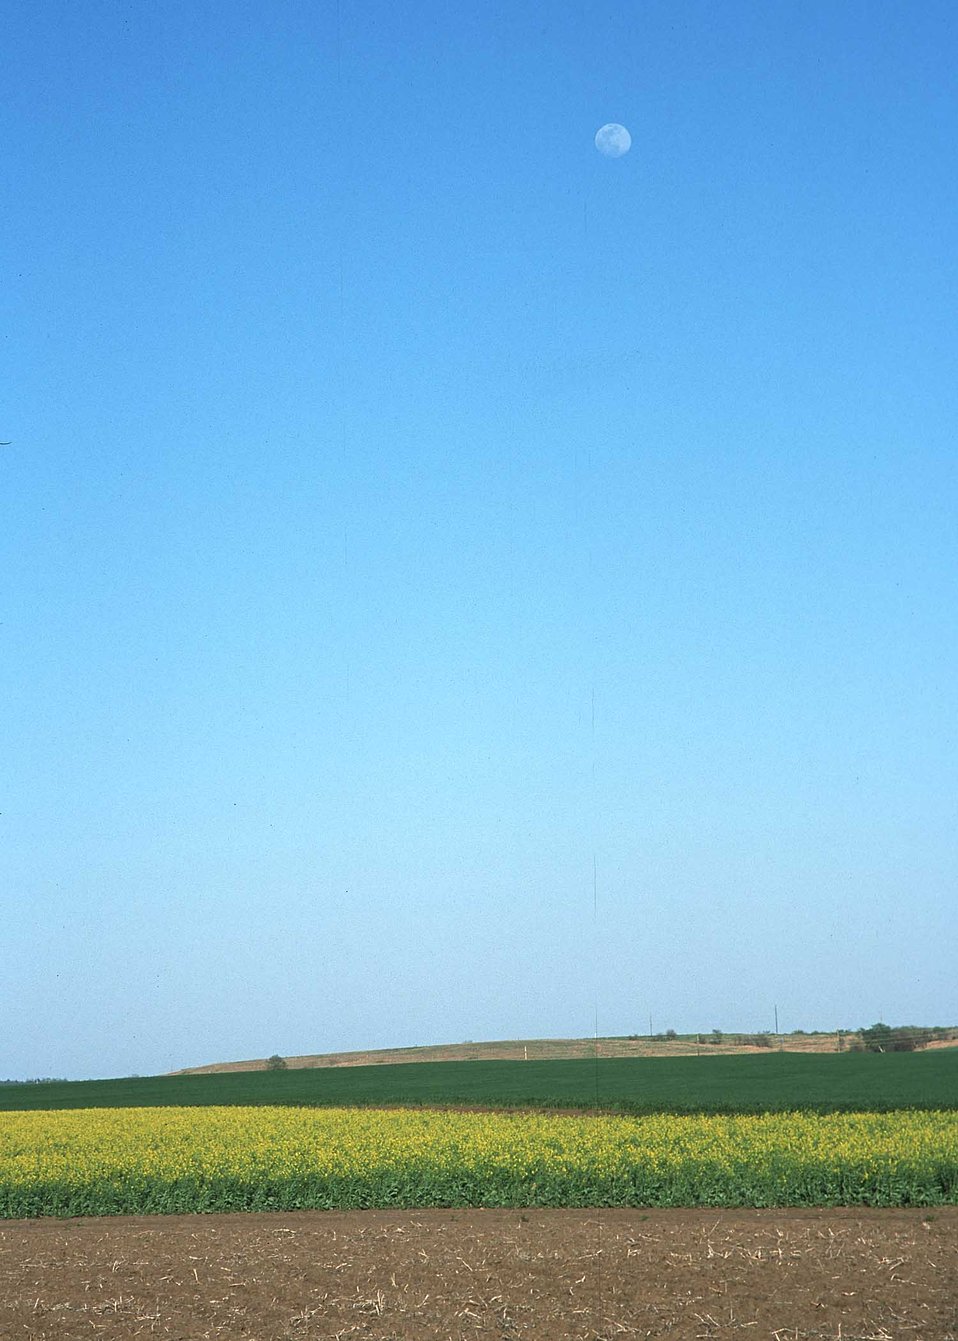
A field of Canola growing in Manhattan, Kansas.